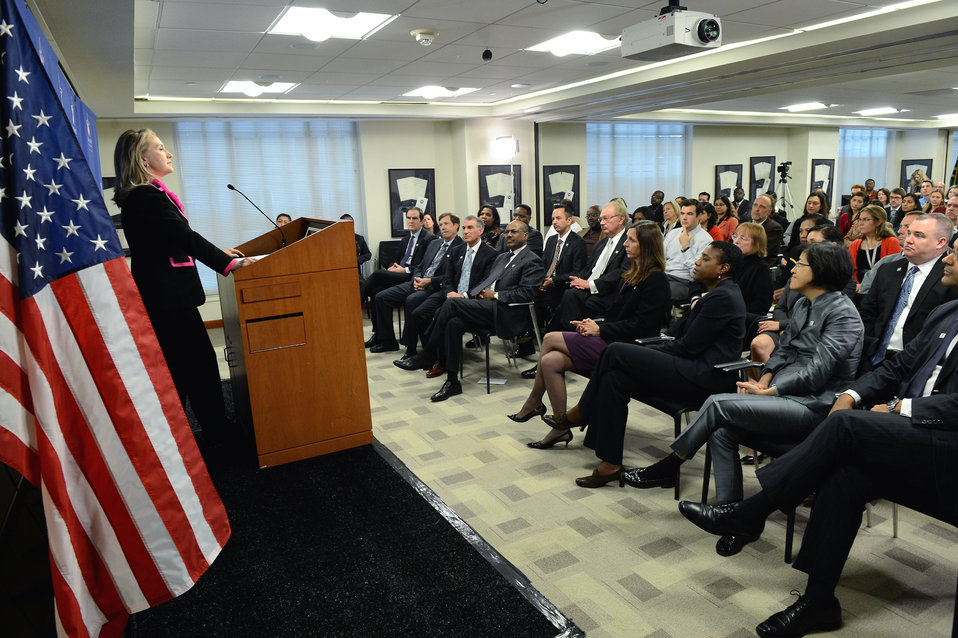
Secretary Clinton Delivers Remarks to the Millennium Challenge Corporation

U.S. Secretary of State Hillary Rodham Clinton delivers remarks to the Millennium Challenge Corporation in Washington, D.C., November 27, 2012.